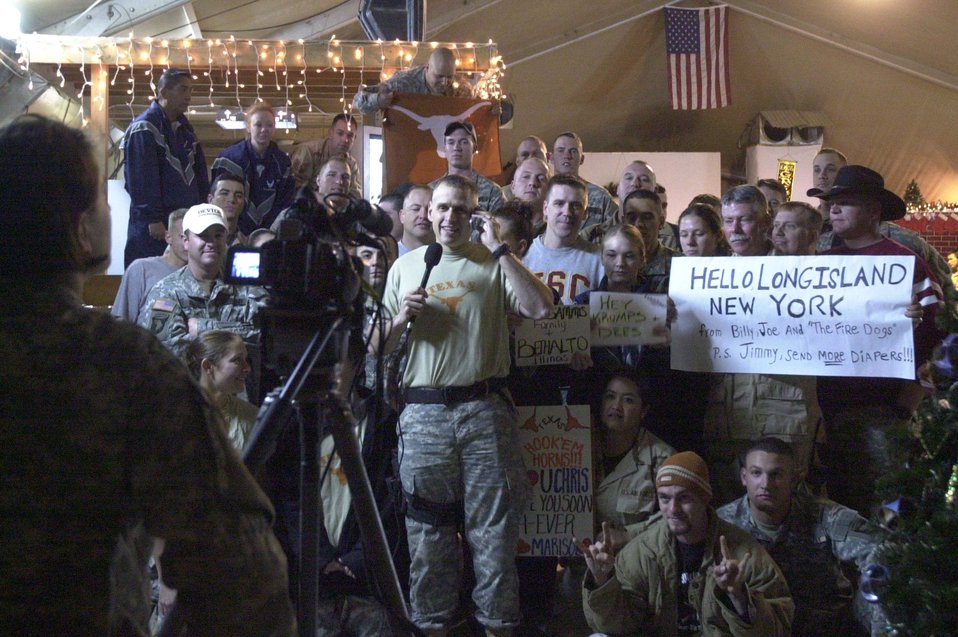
Rose Bowl fever

KUKRUK AIR BASE, Iraq (AFPN) -- Airmen and Soldiers of the 506th Air Expeditionary Group and 1st Brigade Combat Team crowd in front of a video camera before the 2006 Rose Bowl game. The troops -- including both University of Texas Longhorns and University of Southern California Trojans fans -- gathered at the